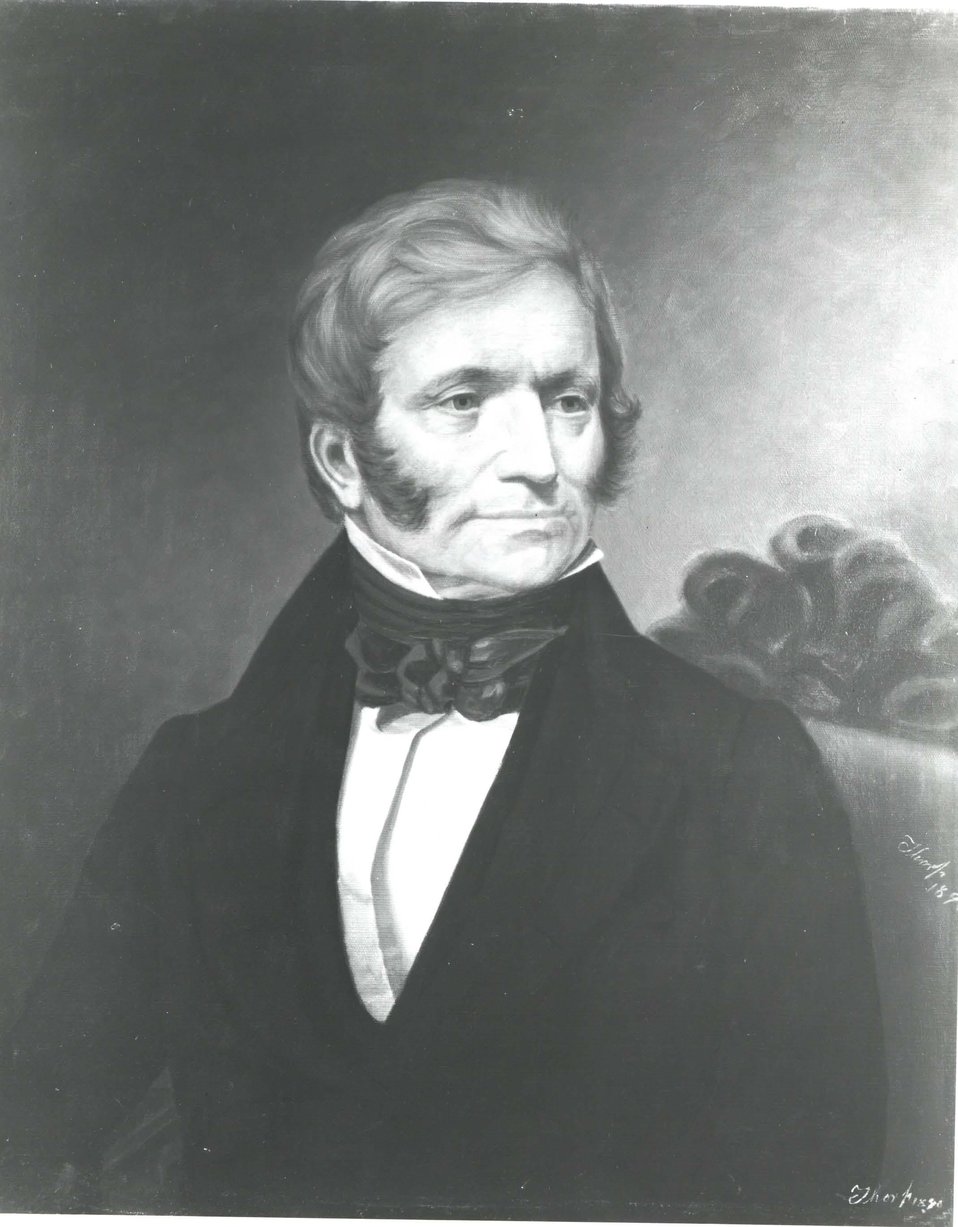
John Forsyth, U.S. Secretary of State, July 1, 1834 to March 3, 1841